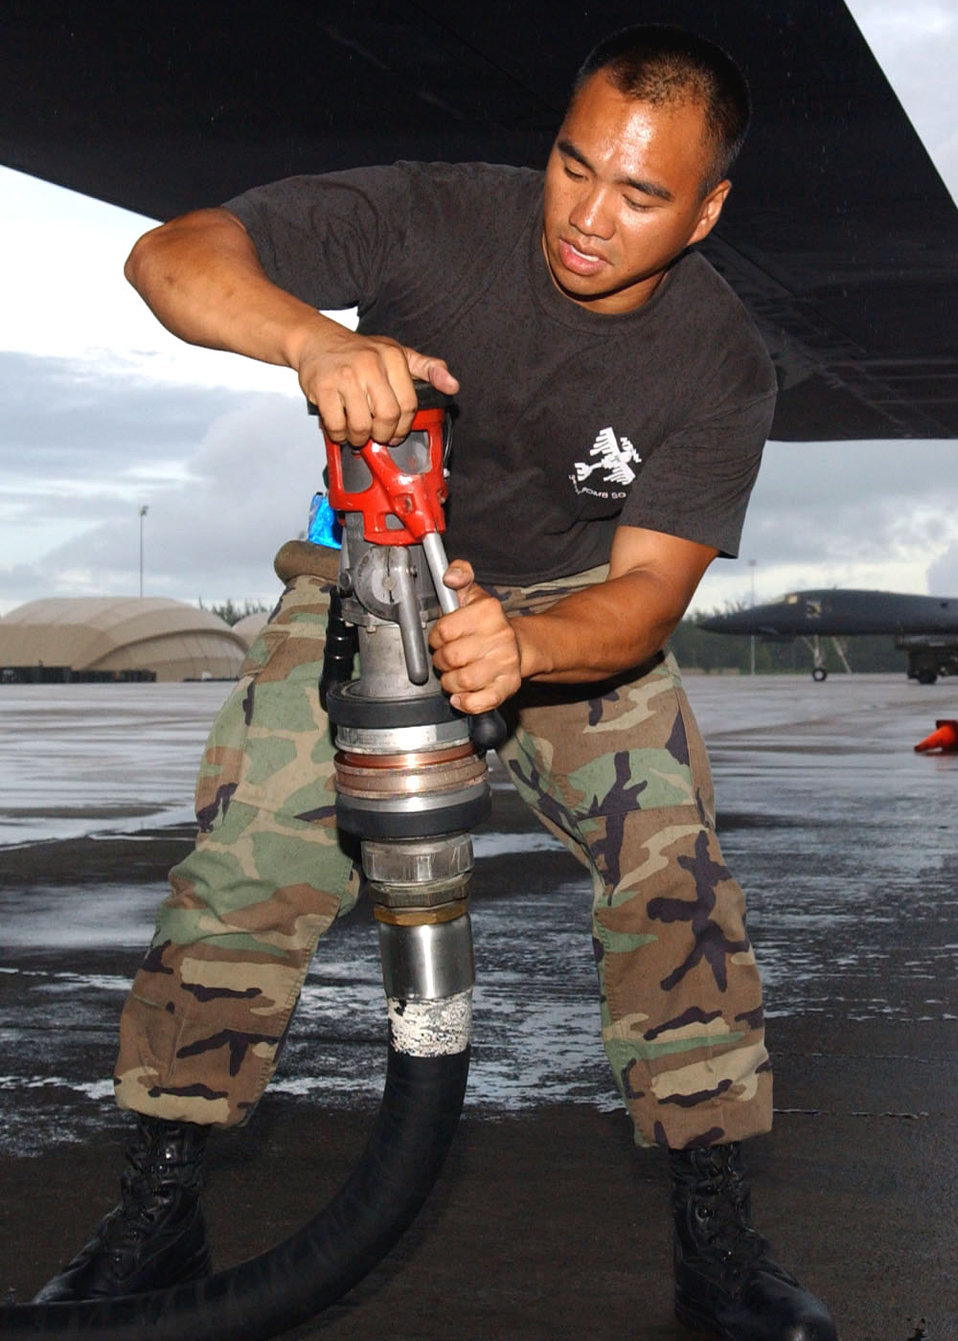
Getting a hookup

SOUTHWEST ASIA -- Staff Sgt. Jason Justice prepares to attach a fuel line to a B-1B Lancer. Airman Justice is deployed to the 40th Expeditionary Maintenance Squadron supporting operations Enduring Freedom and Iraqi Freedom.